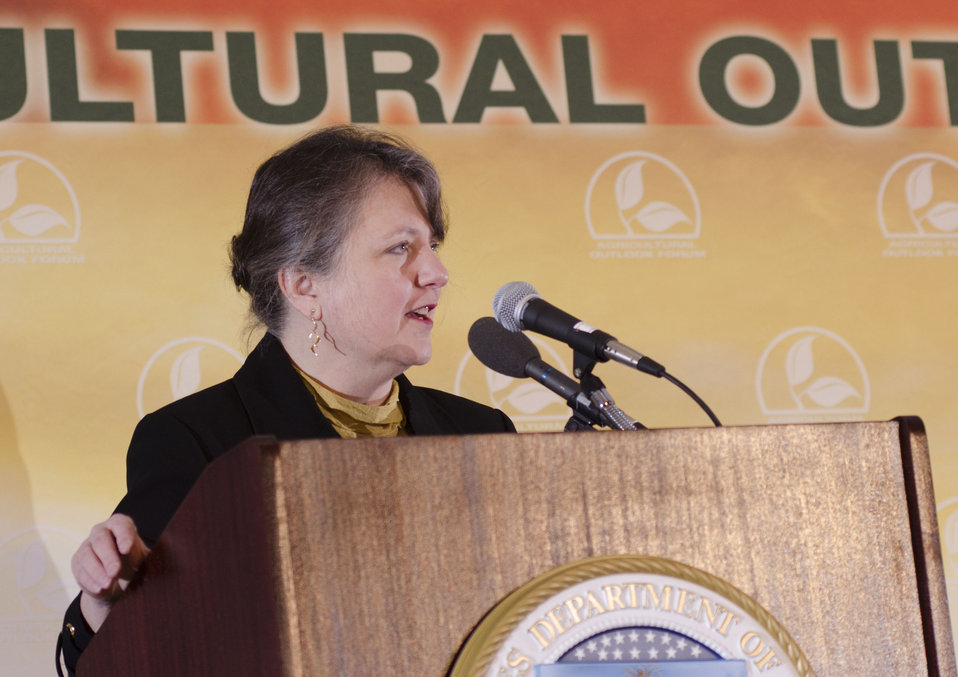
Agriculture Deputy Secretary Kathleen Merrigan makes welcoming remarks at the Opening session of the 2013 Agriculture Outlook Forum, in Crystal City, VA, on Thursday, February 21, 2013.